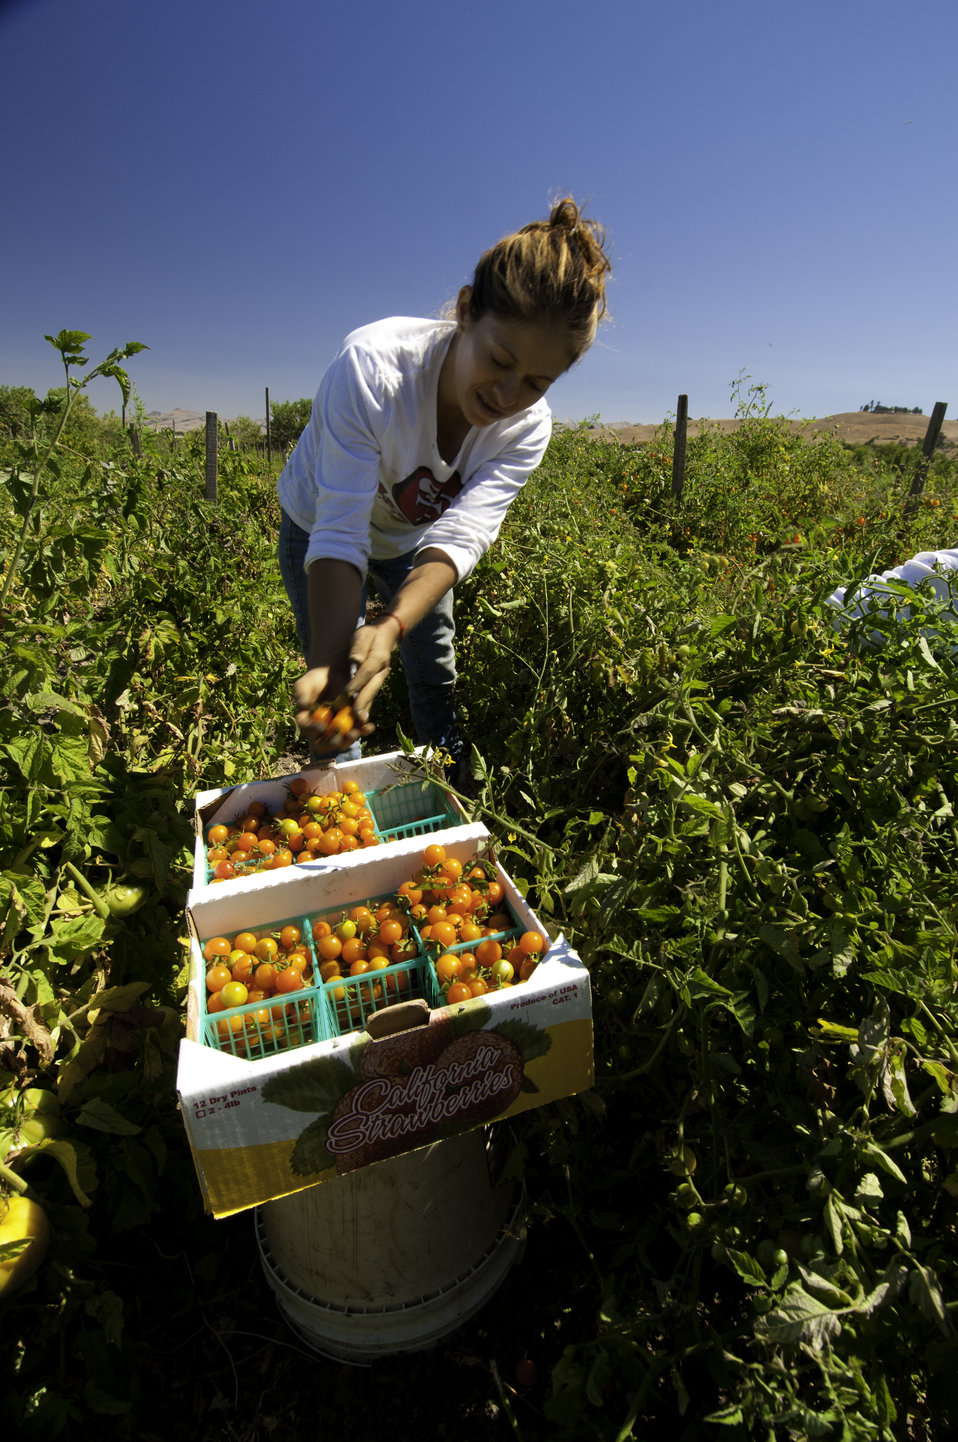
Migrant workers harvest tomatoes on Uesugi Farms in Gilroy, CA on Wednesday, Aug. 28, 2013.